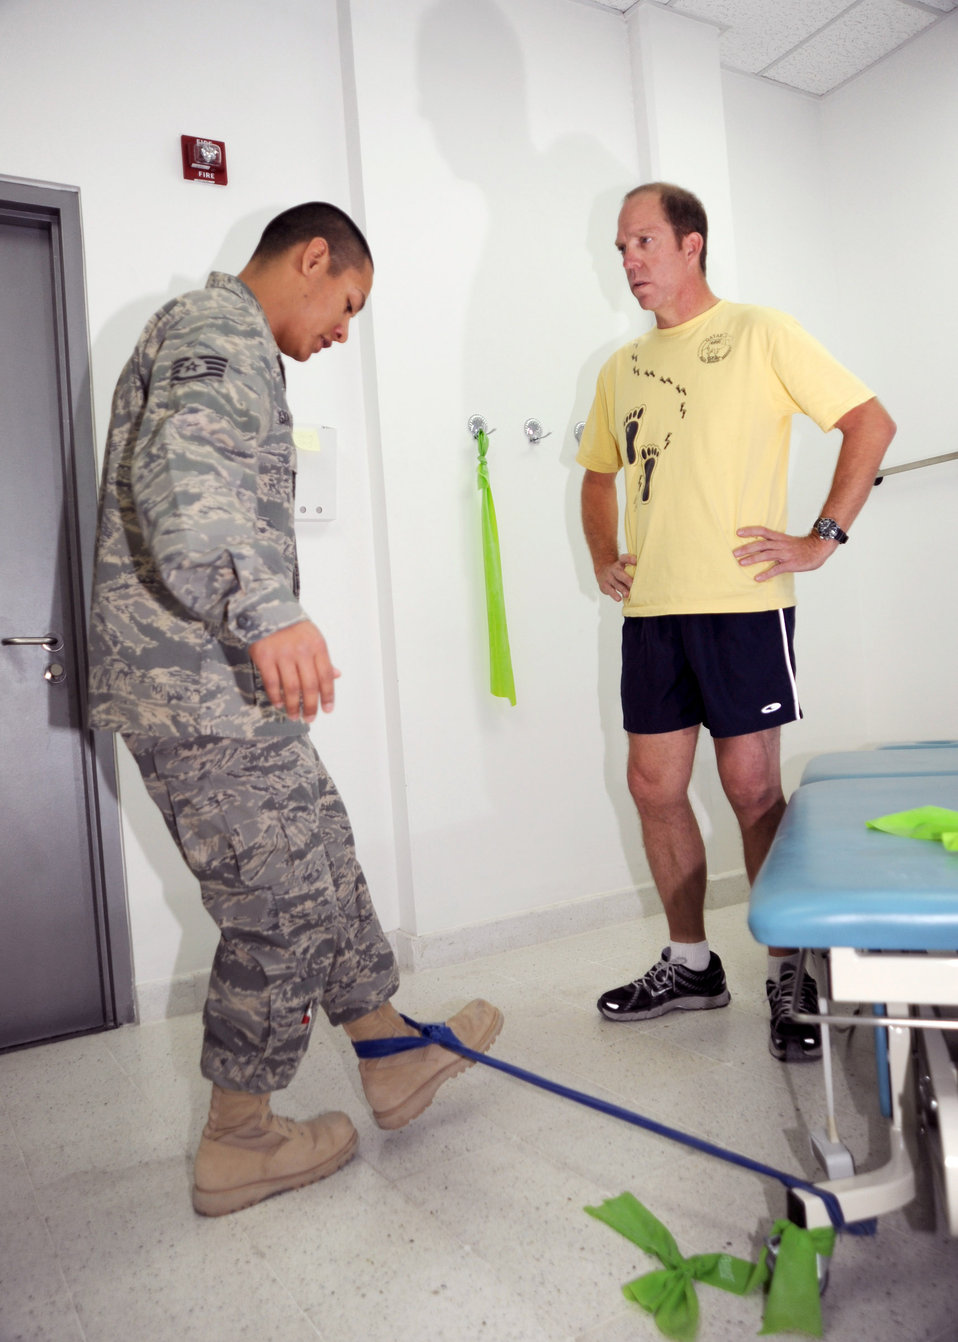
Physical therapy keeps Airmen fit to fight

Staff Sgt. David Garcia, 379th Expeditionary Medical Group NCOIC of the physical therapy clinic at an air base in Southwest Asia, demonstrates hip kicks with a resistant exercise band Feb. 24 for Randy Fort, a retired Navy petty officer and base employee, to help him strengthen his legs after knee surgery.